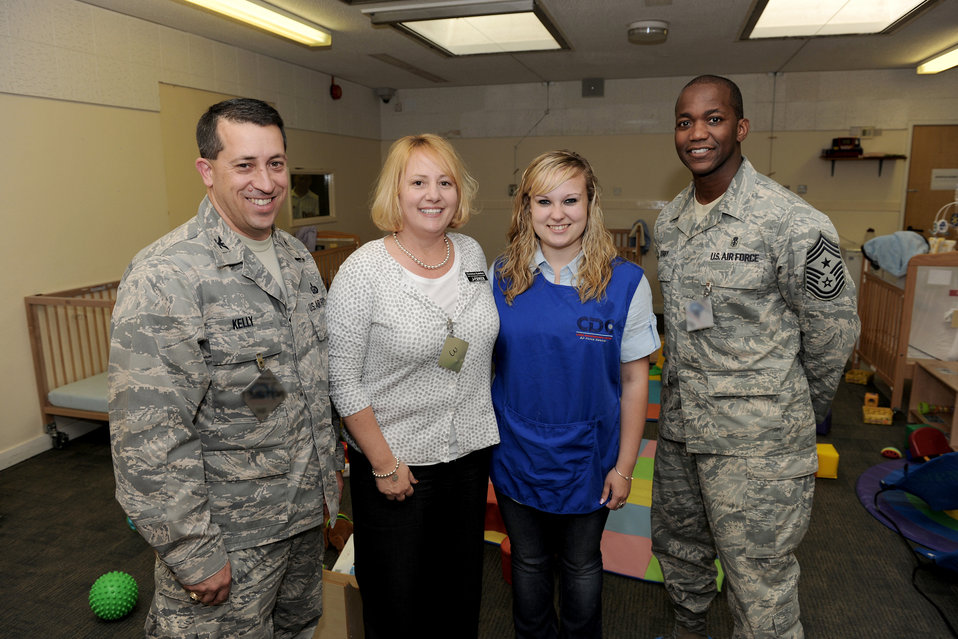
CDC volunteers

Col. Brian Kelly (far left) and Chief Master Sgt. Larence Kirby (far right) stand with Christine Kaleikini (center left) and Natasha Matthews (center right) in the Royal Air Force Alconbury Child Development Center May 6, 2011, after recognizing the volunteers' efforts to support the Aviano CDC during Operations Odyssey Dawn and Unified Protector.